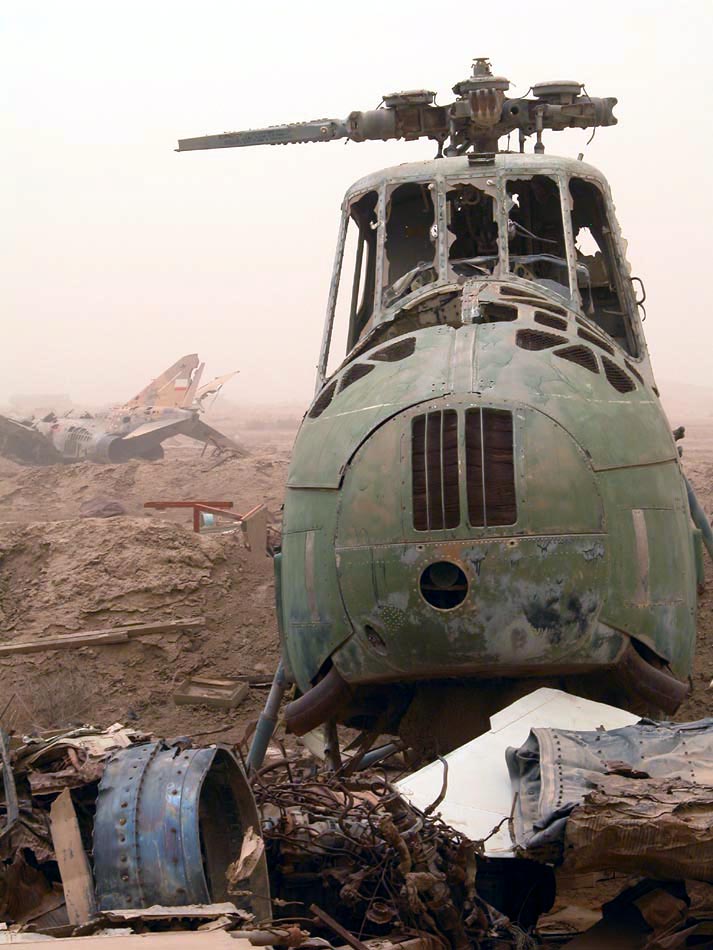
Skeletons

OPERATION IRAQI FREEDOM (AFPN) -- The wreckage of an Iraqi air force helicopter and jet sit amid the debris of an aircraft bone yard on Tallil Air Base in southern Iraq. Many of the wrecked aircraft, which had been destroyed during Operation Desert Storm in 1991, were pushed onto the base's runway in an effort to keep coalition forces from using the field. Since taking the air base in late March, most of the debris and wreckage has been removed and active air operations are running 24 hours.